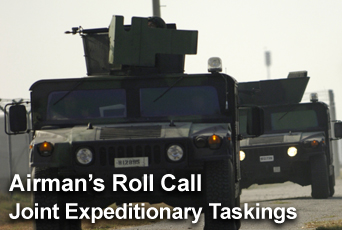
Airman's Roll Call: Joint expeditionary taskings

This week's Airman's Roll Call focuses on terms used to describe Airmen fulfilling nontraditional roles in the deployed environment.